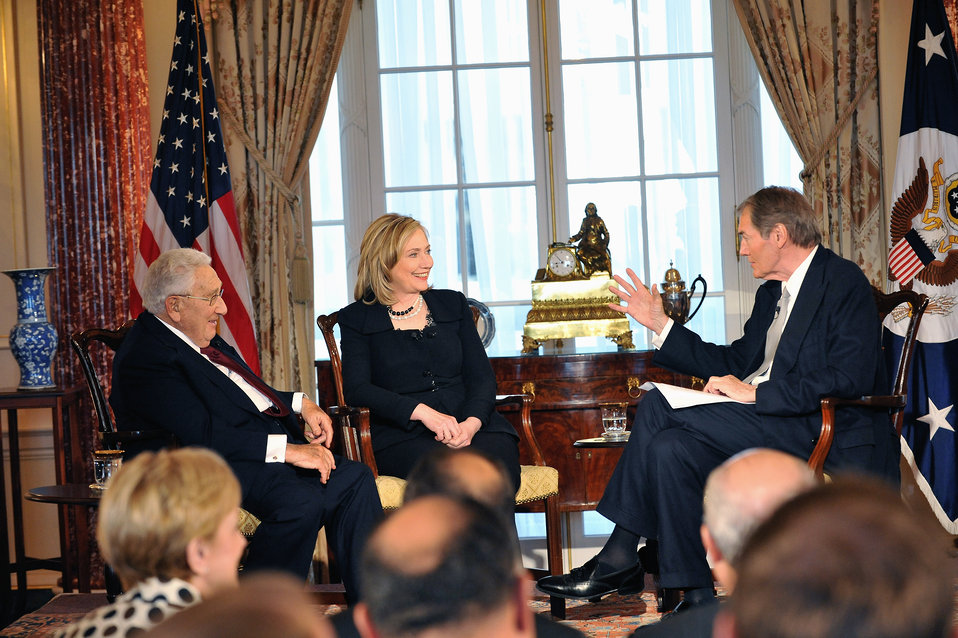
Secretary Clinton and Former Secretary Kissinger Film 'Conversations on Diplomacy, Moderated By Charlie Rose'

U.S. Secretary of State Hillary Rodham Clinton and former U.S. Secretary of State Henry Kissinger film, 'Conversations on Diplomacy, Moderated by Charlie Rose,' at the U.S. Department of State in Washington, D.C., on April 20, 2011.